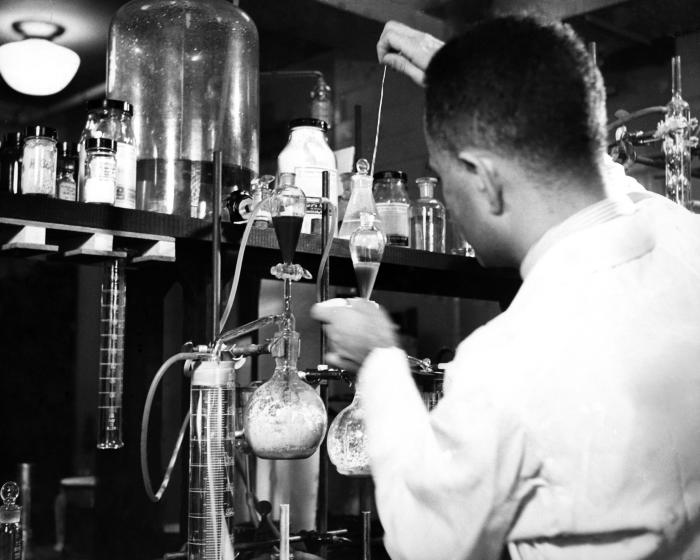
This November, 1943 photograph was provided by the Center for Disease Control's (CDC), National Institute for Occupational Safety and Health (NIOSH). The image depicted a doctor who was analyzing blood samples for the presence of xyledine, also known as xylidine (dimethylaniline), which is a chemical used in the creation of dyes, acting as a dyestuff intermediate. The chemical is also used in the blending of gasoline mixtures. Exposure to xylidine can occur via inhalation, ingestion, eye contamination, or by absorption through the skin. Based on effects seen in animals, xylidine is a potential human carcinogen. This man was not wearing a protective filtered breathing mask, goggles, or gloves while carrying out these experiments.